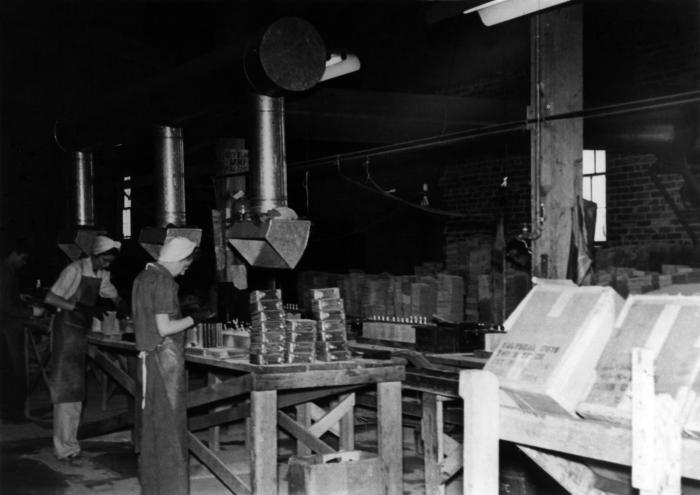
This historical photograph was provided by the Center for Disease Control's (CDC), National Institute for Occupational Safety and Health (NIOSH). The image depicted a number of female employees who were processing lead paste. Note that workers were not using respiratory protection though ventilators were in evidence at their work stations, which hopefully, were working at optimum levels.Workers can be exposed to lead through inhalation of fumes and dusts, as well as through ingestion as a result of lead-contaminated hands, food, drinks, cosmetics, tobacco products, and clothing. Furthermore, workers can take lead home on their clothes, skin, hair, tools, and in their vehicles, potentially exposing their families to this element's harmful health effects.